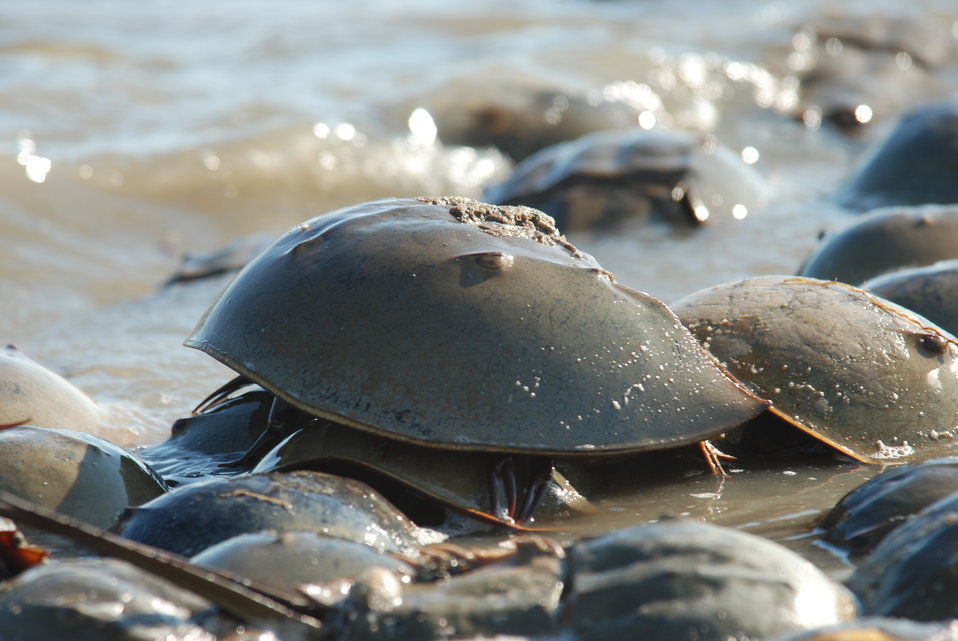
Hoseshoe Crab

Mispillion Harbor, Delaware.